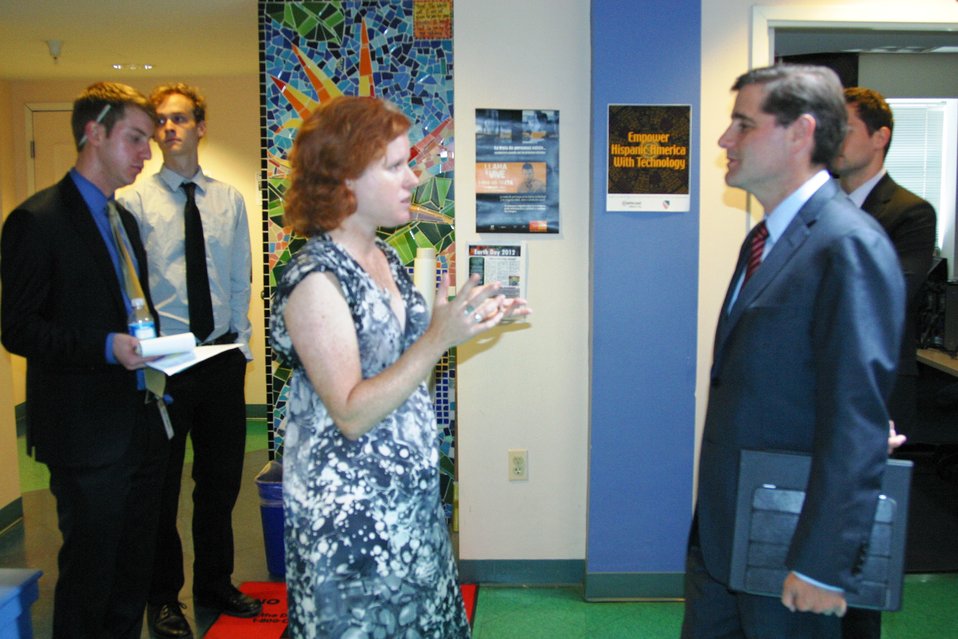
Connect 2 Compete: LULAC 8.7.12

FCC Chairman Julius Genachowski speaking with the crowd post the launch of a nationwide computer recycling and donation effort to support C2C’s efforts to close the digital divide. #PCPledge100